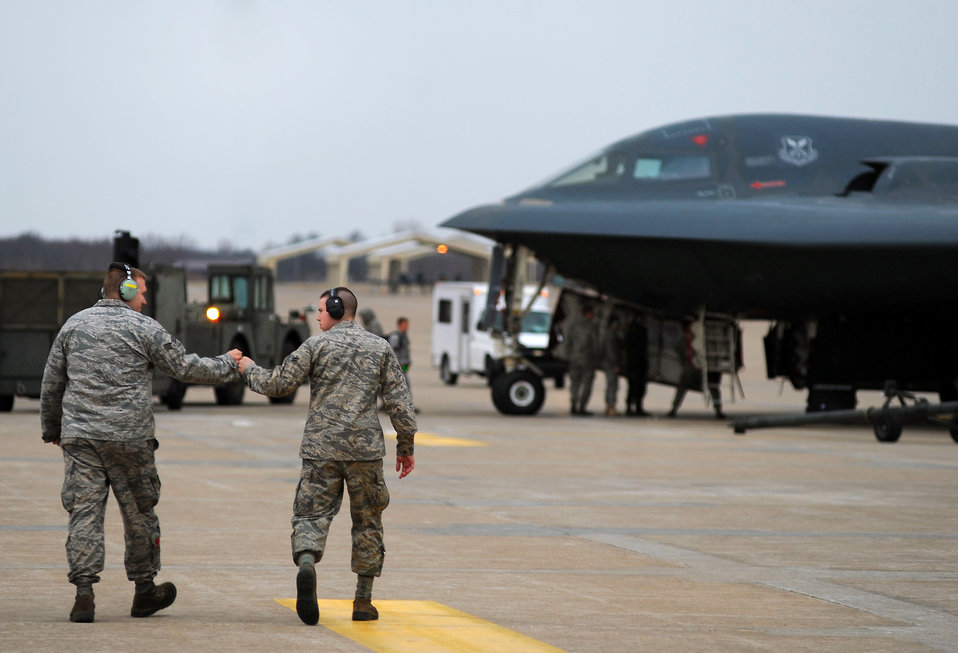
Operation Odyssey Dawn

WHITEMAN AIR FORCE BASE Mo. 509th Aircraft Maintenance Squadron, maintainers and crew chiefs, prepare B-2 Stealth Bombers for Operation Odyssey Dawn March 19, 2011.